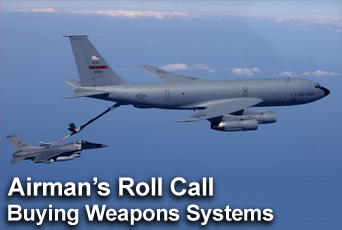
This week's Airman's Roll Call discusses how the Air Force buys weapon systems

This week's Airman's Roll Call focuses on the acquisition process the Air Force goes through to purchase new weapon systems.